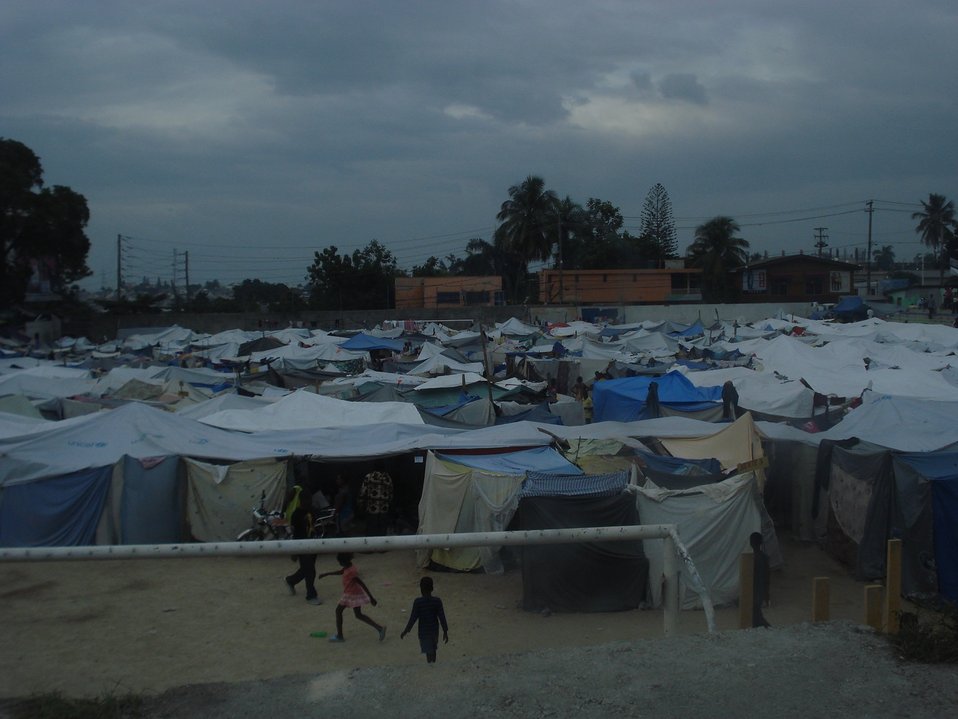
Tent City (Haiti Earthquake - 2010)

Photos shot by team sent by the FCC to assist communications recovery in Haiti. Photos shot by team sent by the FCC to assist communications recovery in Haiti.